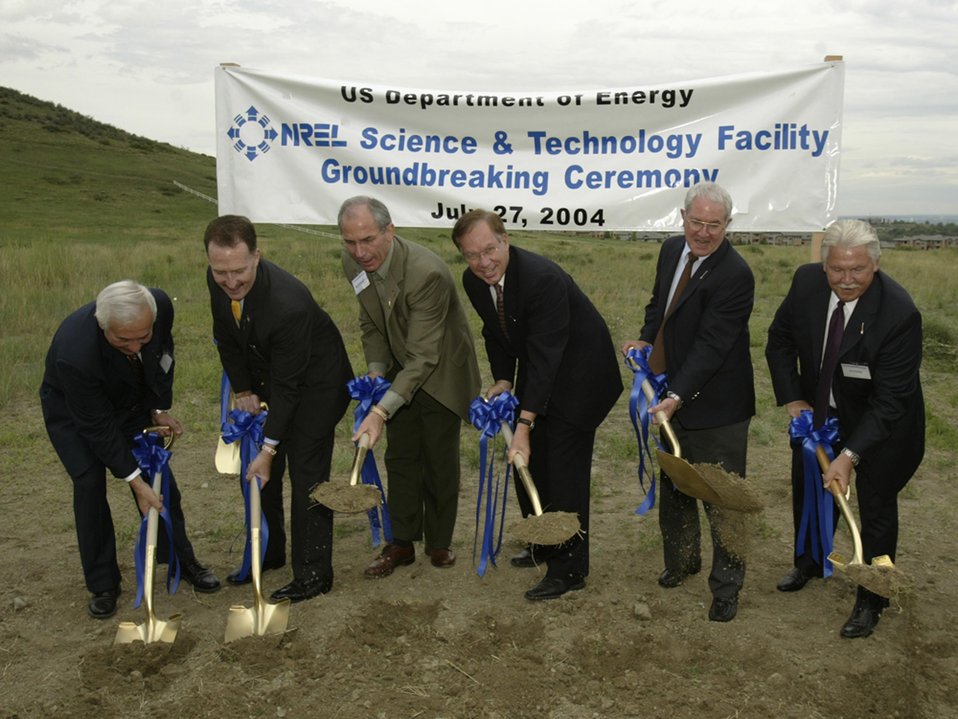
GROUNDBREAKING, JULY 27, 2004, FOR NREL'S SCIENCE AND TECHNOLOGY FACILITY.

THE NEW SCIENCE AND TECHNOLOGY FACILITY AT DOE'S NATIONAL RENEWABLE ENERGY LABORATORY IN GOLDEN, COLORADO IS BEING BUILT NEXT TO THE EXISTING SOLAR ENERGY RESEARCH FACILITY. RESEARCH IN THE SCIENCE AND TECHNOLOGY FACILITY WILL FOCUS MAINLY ON PHOTOVOLTAICS. THE FACILITY WILL ALSO ENABLE THE EXPANSION OF RESEARCH CAPABILITIES IN HYDROGEN, SOLID-STATE LIGHTING, THIN FILM COATINGS AND DEVICES, SUPERCONDUCTIVITY, ELECTRO-CHROMIC WINDOWS AND NANOTECHNOLOGIES.